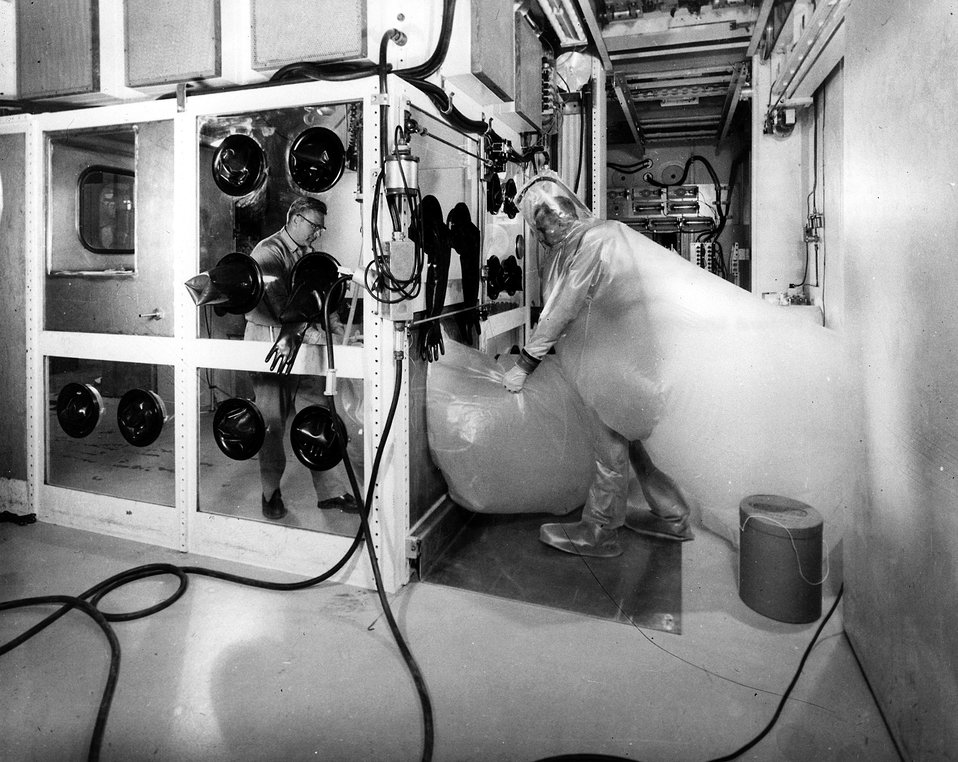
A plastic tunnel suit provides personnel access to the contaminated service areas when gamma levels are below permissible limits.
c.1965